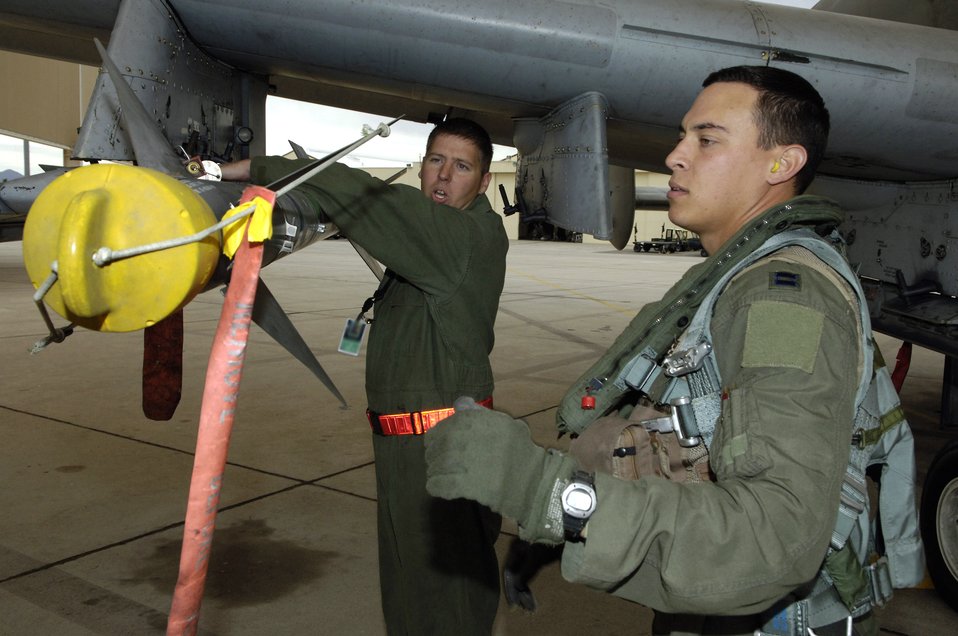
Taking an A-10 from pre-flight to flight

Tech. Sgt. Jerome Westbrook checks an AIM-9 missile with Capt. Andrew Tenenbaum during the captain's pre-flight inspection of his A-10 Thunderbolt II Oct. 29 prior to a mission. Sergeant Westbrook is assigned to the 355th Aircraft Maintenance Squadron and Captain Tenenbaum is a pilot in the 354th Fighter Squadron at Davis-Monthan Air Force Base, Ariz.